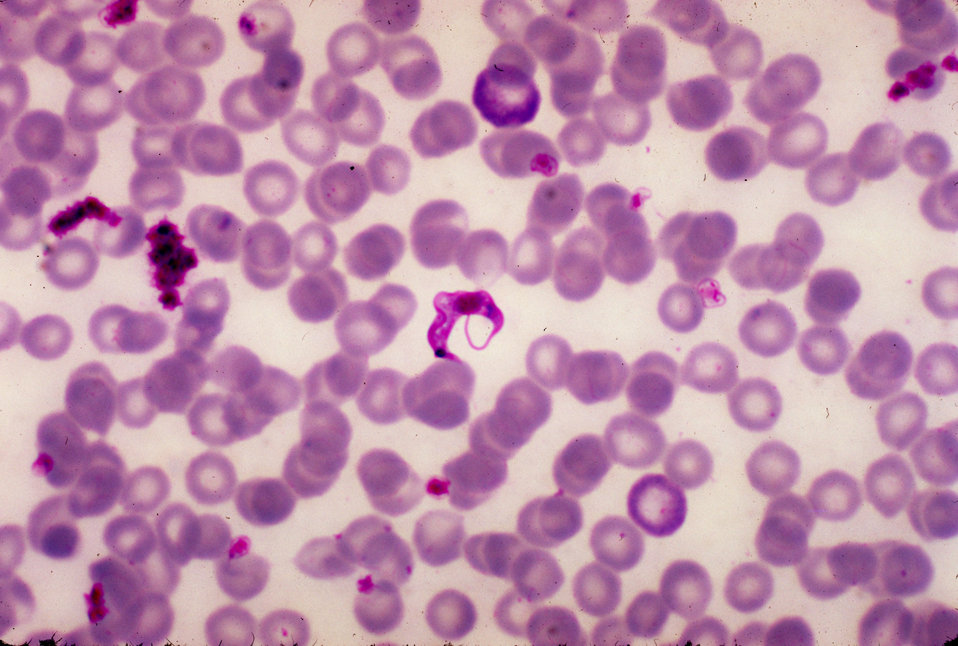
This is a micrograph of Trypanosoma cruzi in a blood smear using Giemsa staining technique.